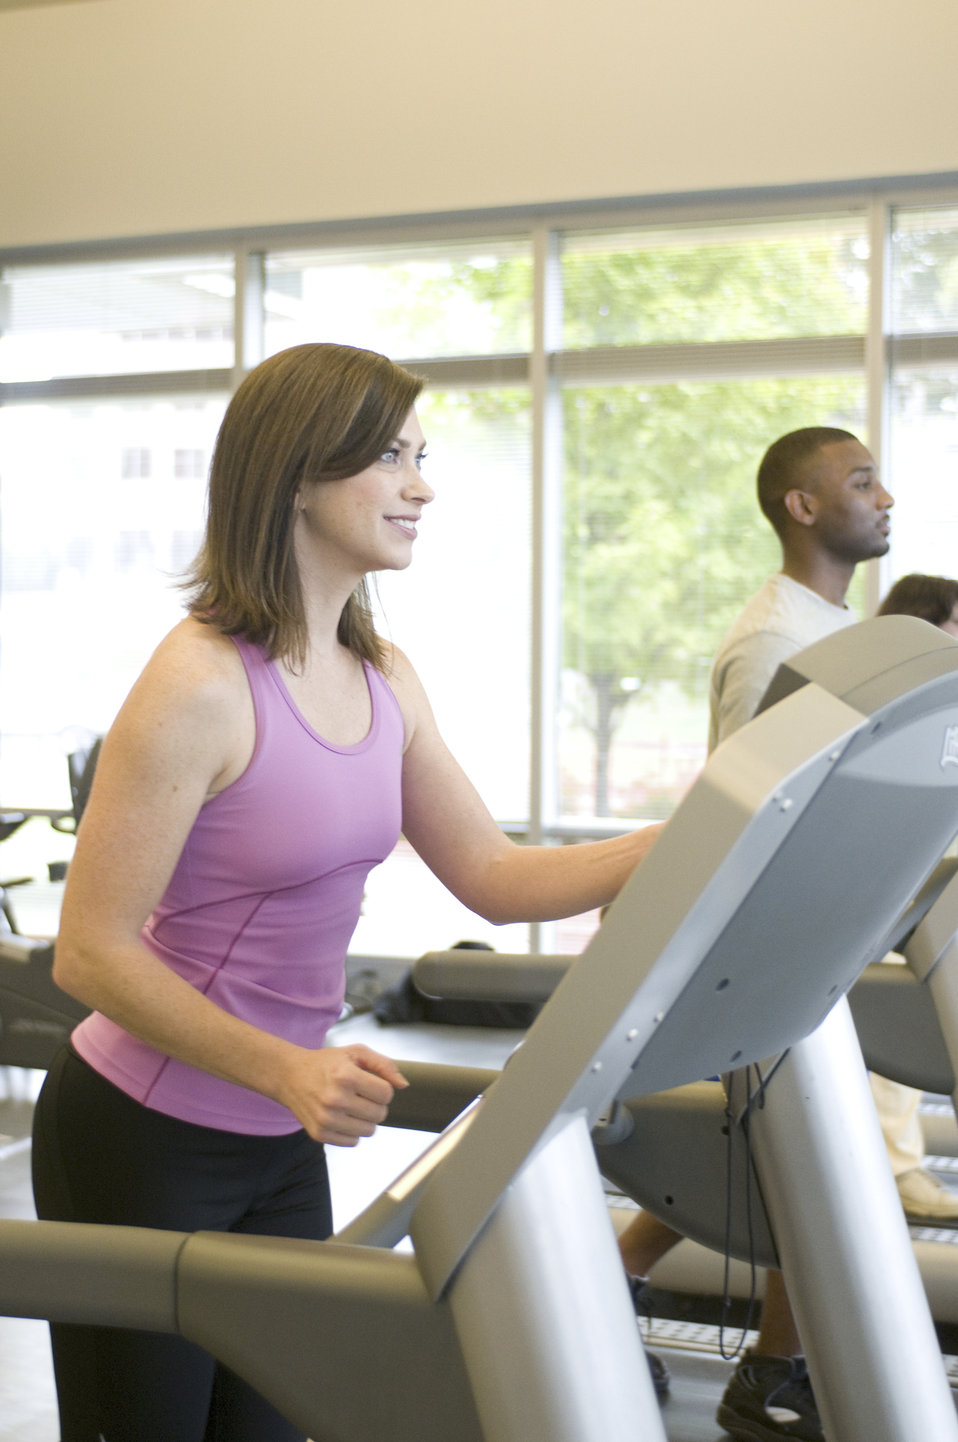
This image was captured on one of the Centers for Disease Control's (CDC) campuses, in the facility's fitness center, where a number of scheduled group classes are provided for employees' health and enjoyment. In this particular view, a female CDC staffer was making use of a treadmill, taking part in some aerobic exercise.